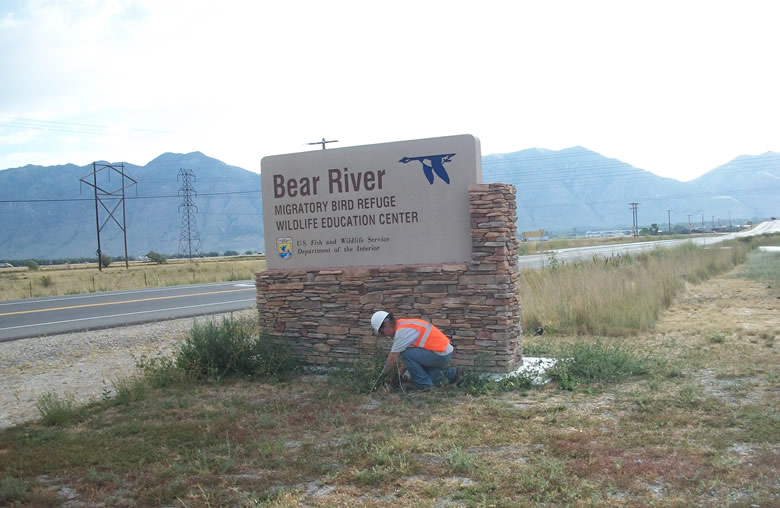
Weeding near the Bear River Migratory Bird Refuge sign

During the first week the Youth Conservation Corps crew removed invasive weeds around the Refuge.